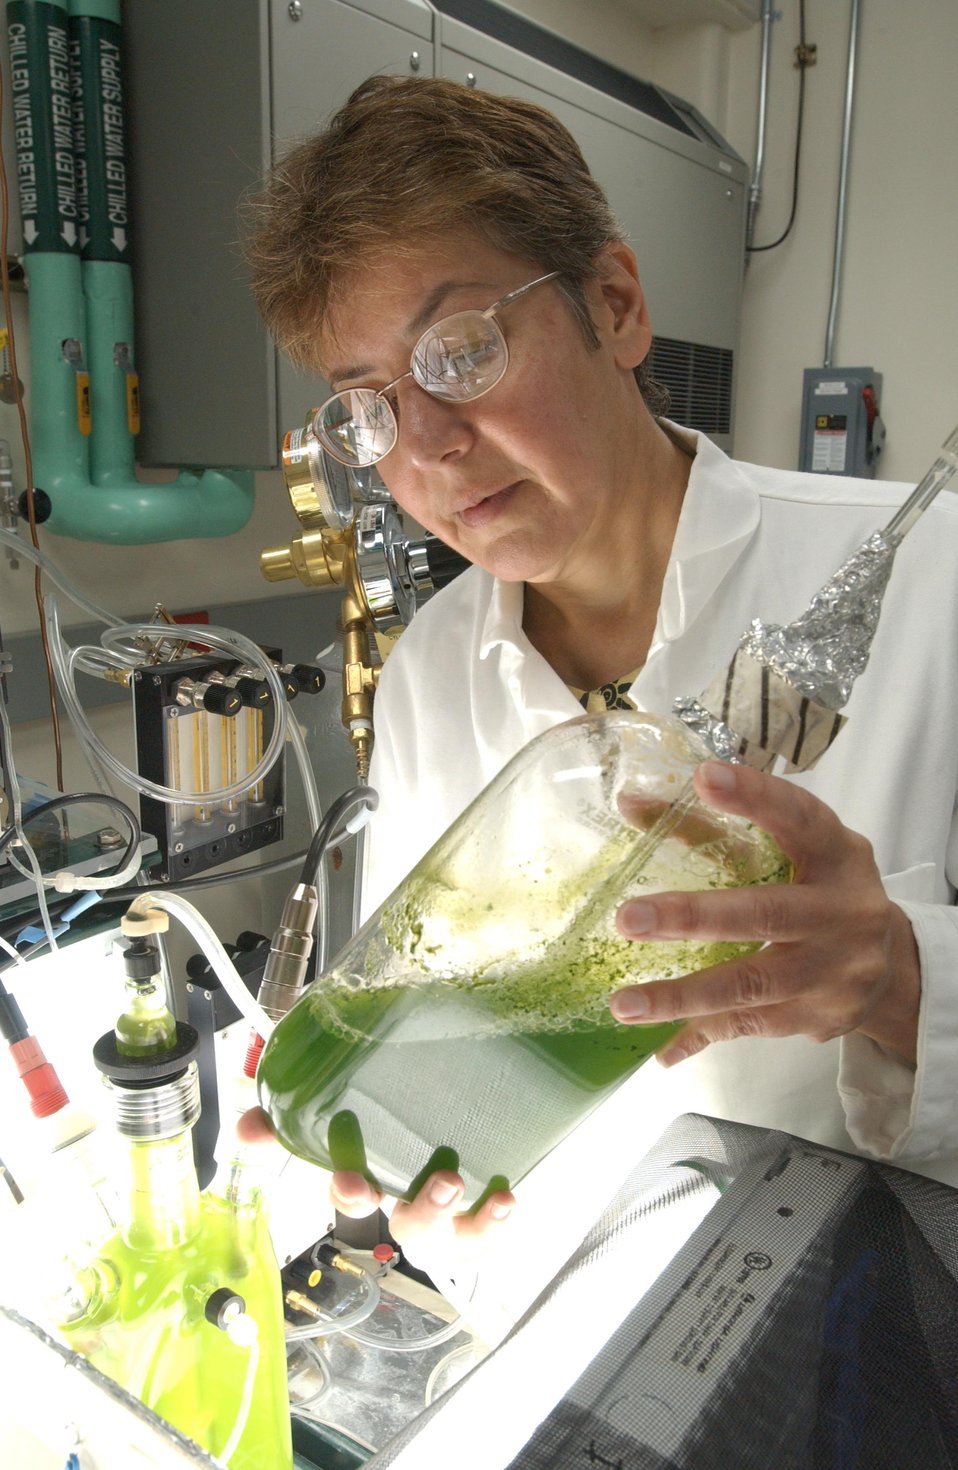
Researchers in NREL's Basic Sciences and Computational Sciences Center are working together on a novel way to use green algae to produce hydrogen directly from water and sunlight, that when recombined with oxygen in a fuel cell, produces clean energy without pollutants.